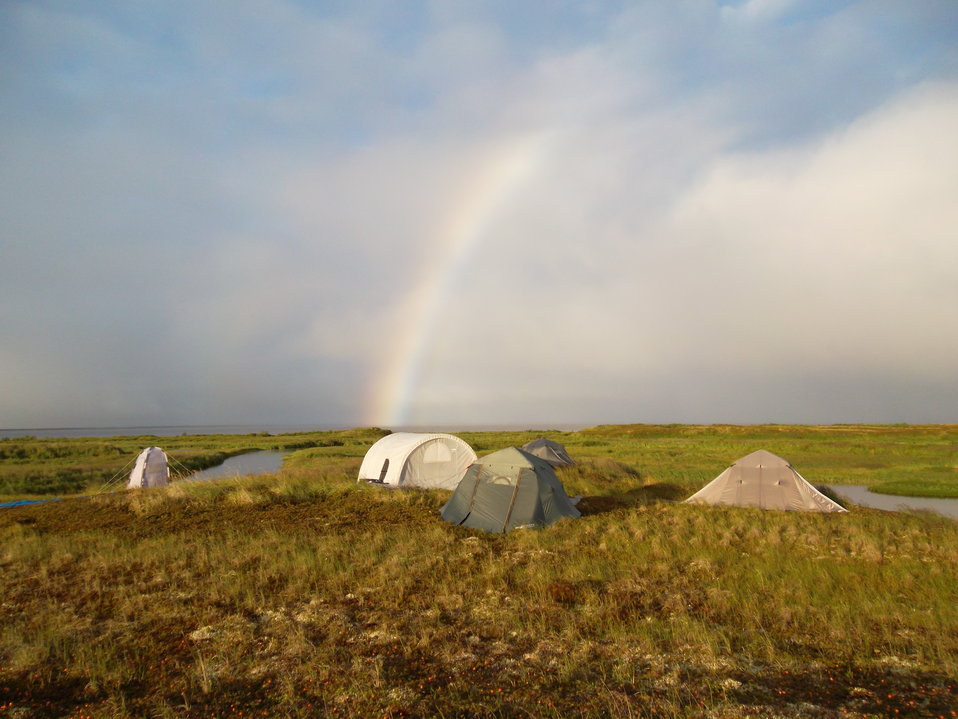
Pre-Season Duck Banding Camp

This camp has been in operation since 1990. It is home for 2-3 people for a month in August.

USFWS Yukon Delta NWR